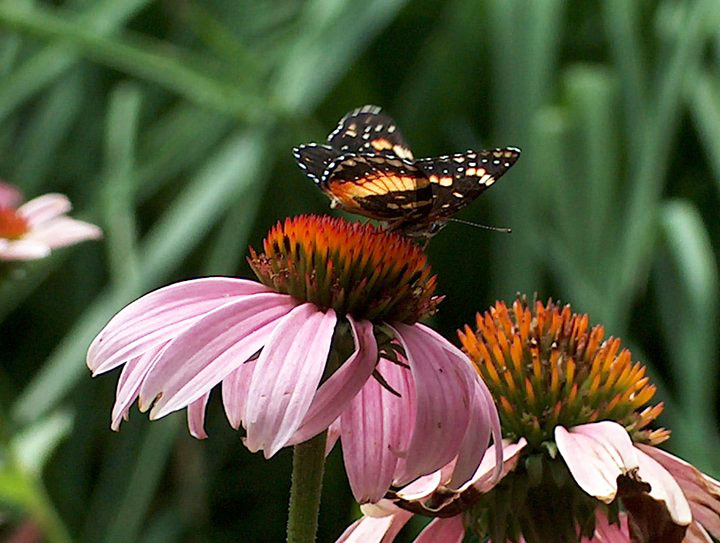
Butterfly

Dexter National Fish Hatchery and Technology Center